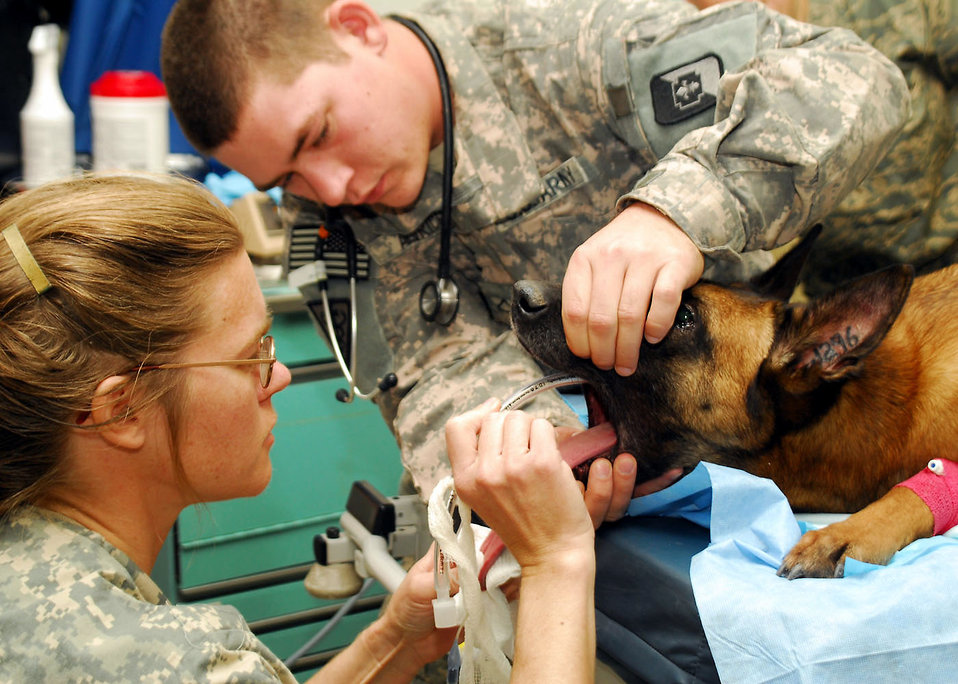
Airmen, Soldiers team up to keep working dog in the fight

Army Pfc. Roderick Aldrich assists Army Capt. (Dr.) Elizabeth Williams with the intubation of Air Force military working dog Kitti before her root canal Jan. 15 at an air base in Southwest Asia. Private Aldrich and Dr. Williams are assigned to the 218th Medical Detachment.